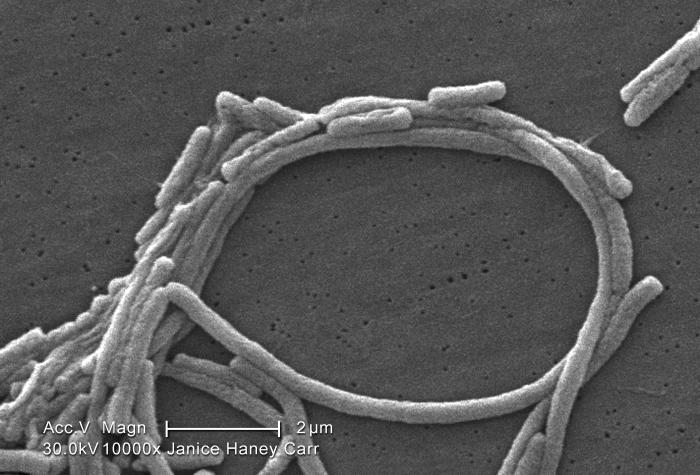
Under a high magnification of 10000X, this scanning electron micrograph (SEM) depicted a grouping of Gram-negative Legionella pneumophila bacteria. Please note that you're able to see a number of the flagella emanating from these organisms. Please see PHIL 11092 through 11152 for additional SEMs of these organisms, specifically PHIL 11108 for a colorized version of this image.